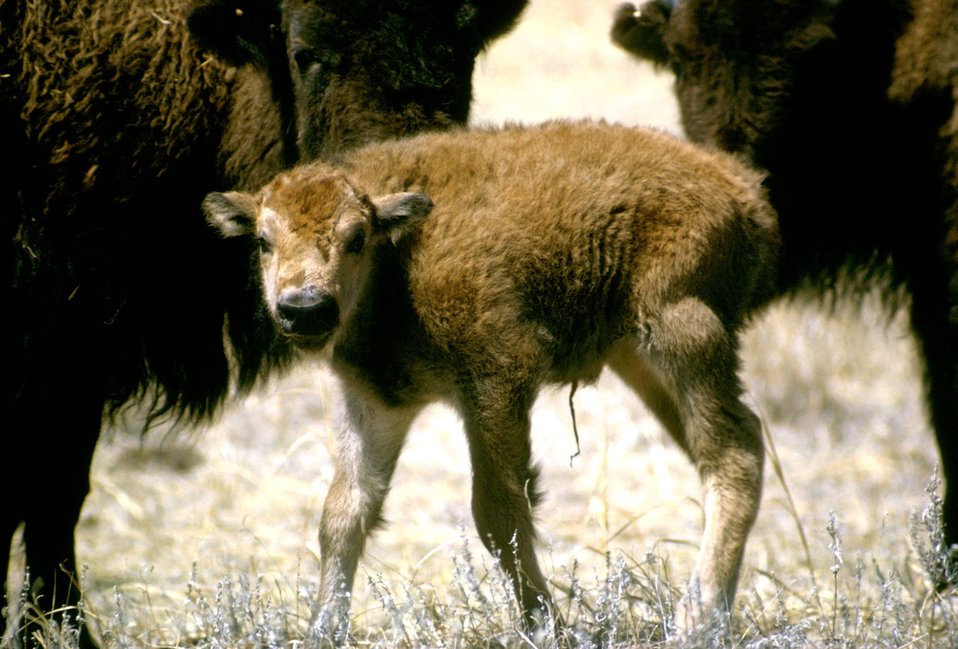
Bison Calf

Adult bison and calf